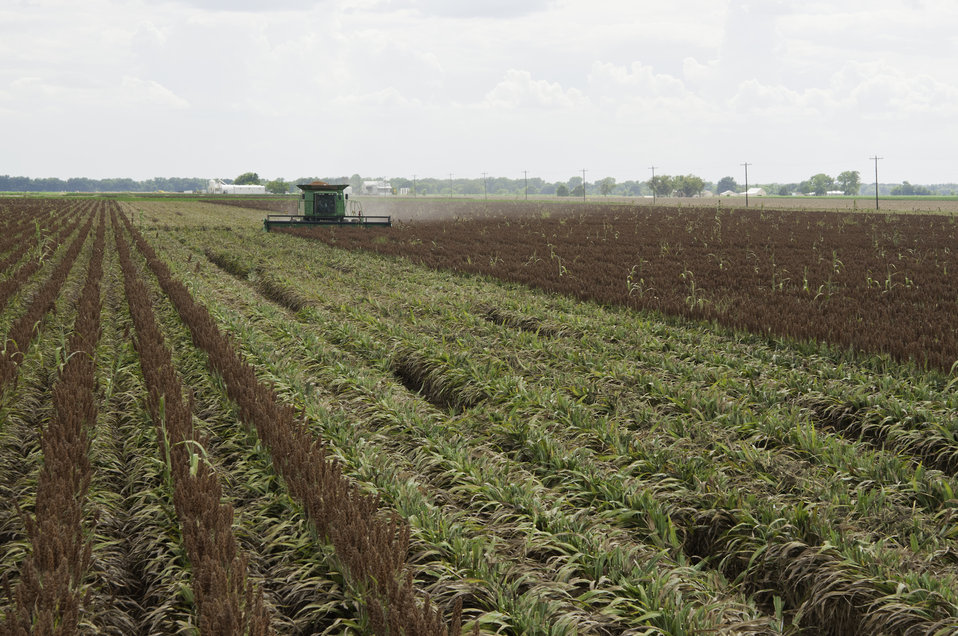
Grain sorghum is harvested on the Wilder Farms in Navasota, TX on Aug. 23, 2013.